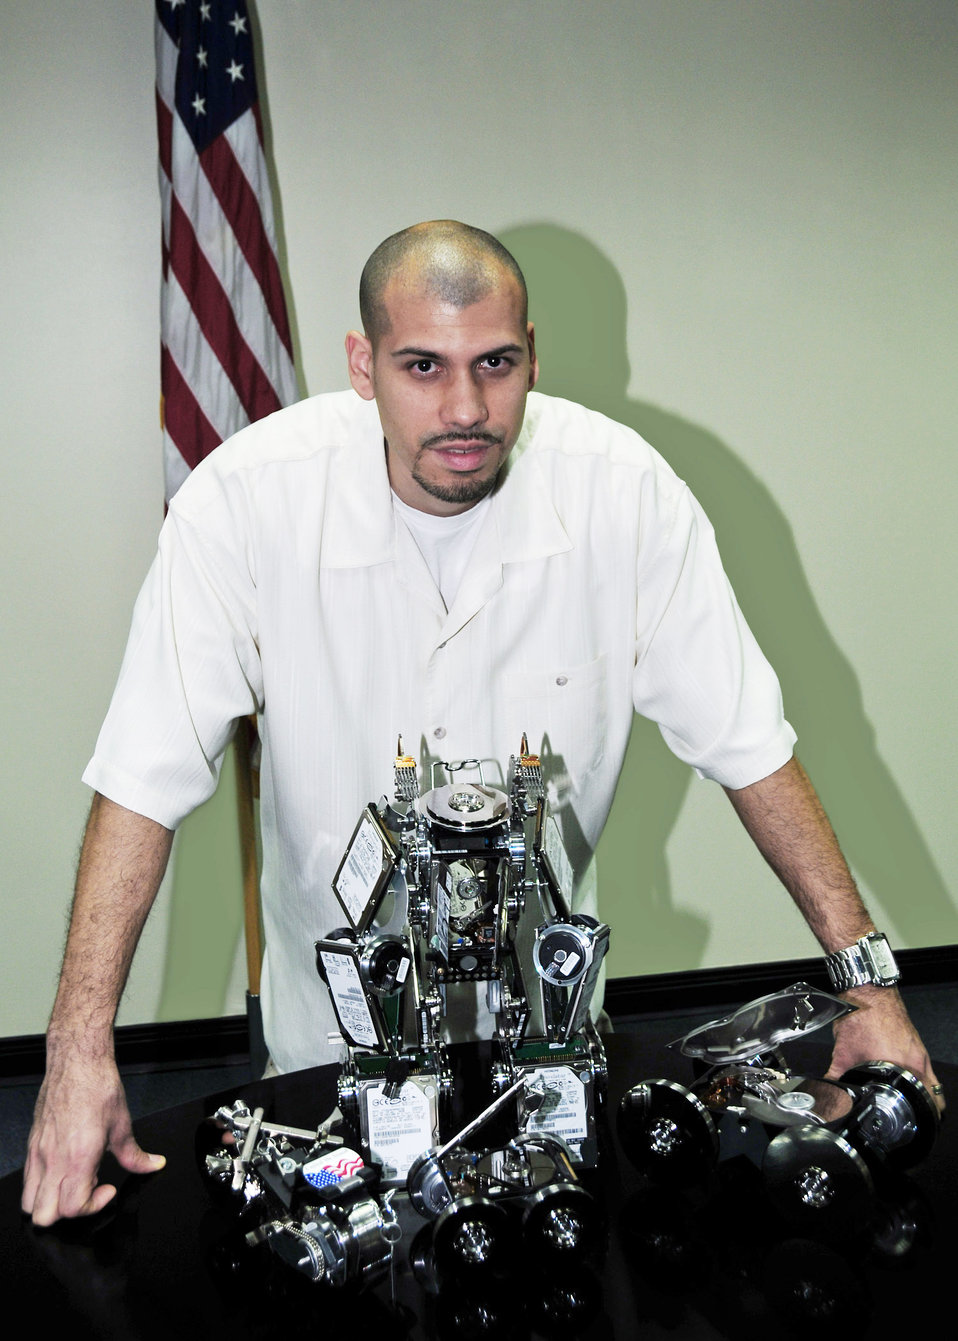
Old hard drive components become medium for unique artwork

Miguel Rivera stands behind his sculptures he built from old hard drives and computer parts Dec. 19, 2009, at an air base in Southwest Asia. Mr. Rivera is a 386th Expeditionary Communications Squadron systems administrator.